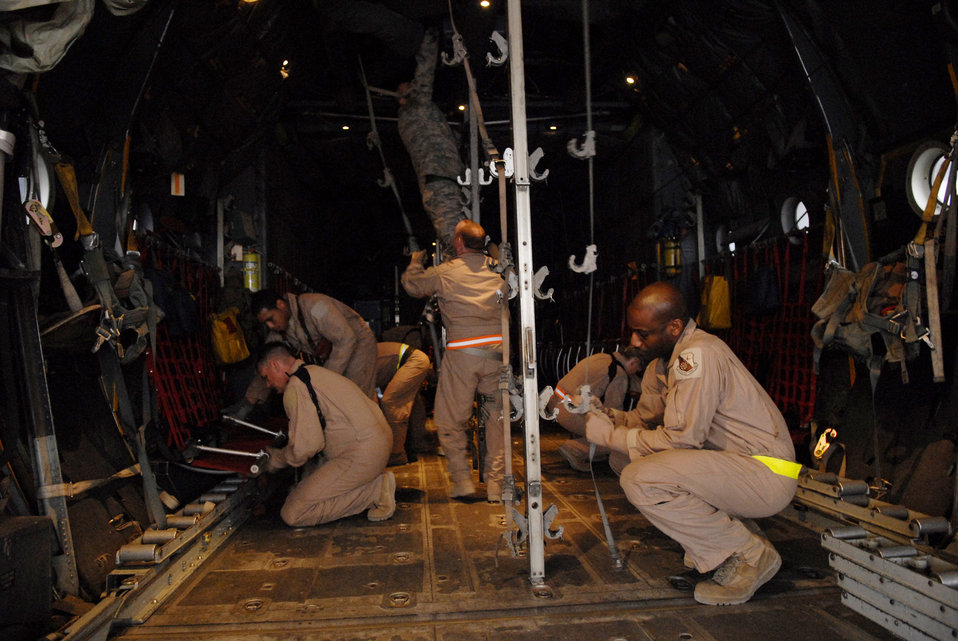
Airmen transport, care for wounded warriors

Airmen configure an aircraft to handle patients and medical equipment before a mission Jan. 11 at an air base in Southwest Asia. The 379th Expeditionary Aeromedical Evacuation Squadron members transport wounded warriors from operations Iraqi Freedom and Enduring Freedom.